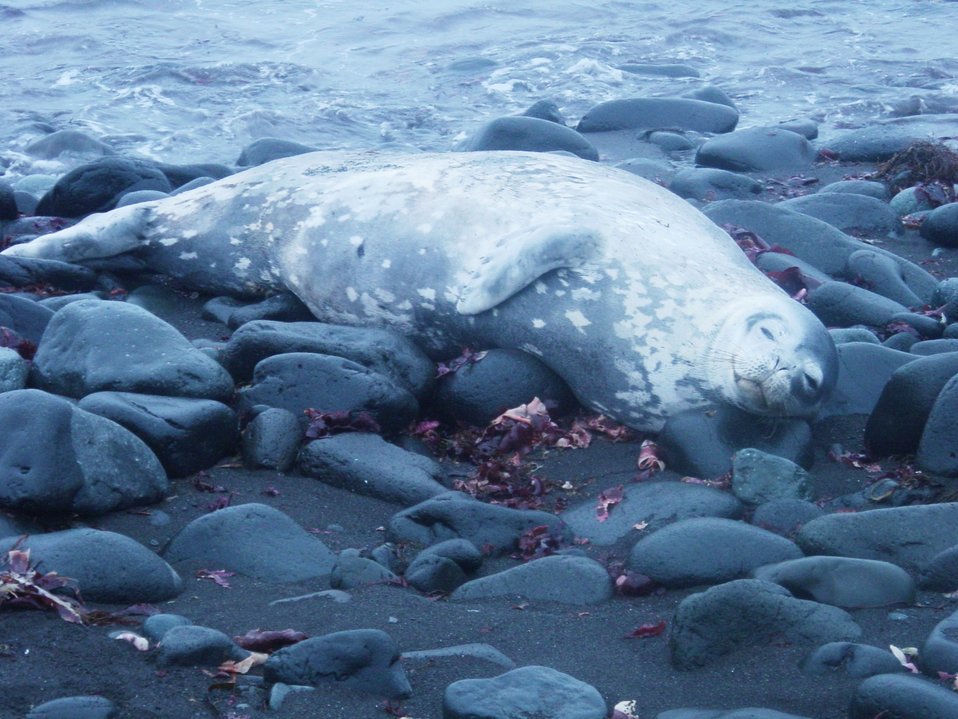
A Weddell seal